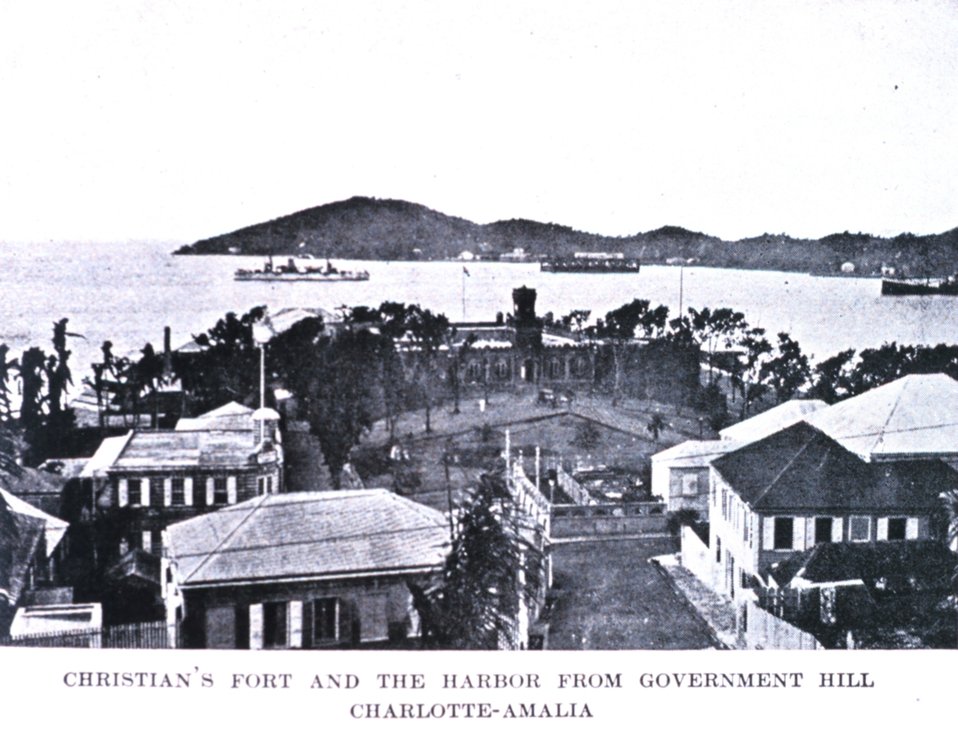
'Christian's Fort and the Harbor from Government Hill, St. Thomas.' In: 'The Virgin Islands Our New Possessions and the British Islands', by Theodoor De Booy and John T. Faris, 1918. J. B. Lippincott and Company, Philadelphia. P. 30. Library Call Number C/hc100 V81 B.